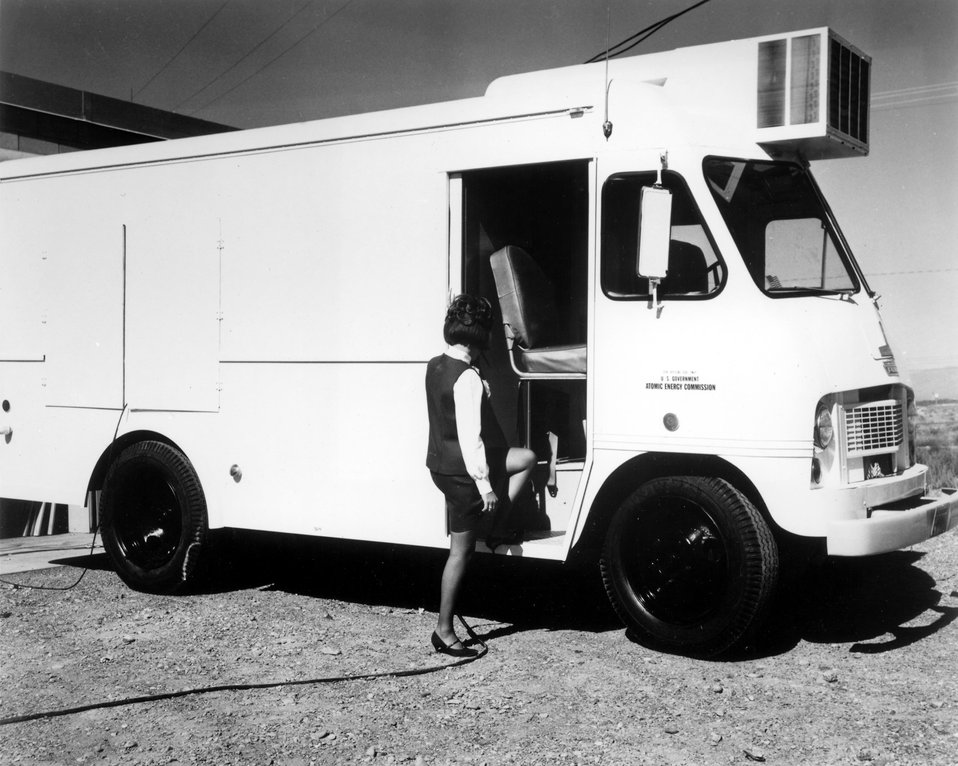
Detection of microscopic flaws in materials is provided by electronic equipment in the Mobile Acoustic Analysis Laboratory developed in 1969 at the National Reactor Testing Station in Idaho. Circa 1970.